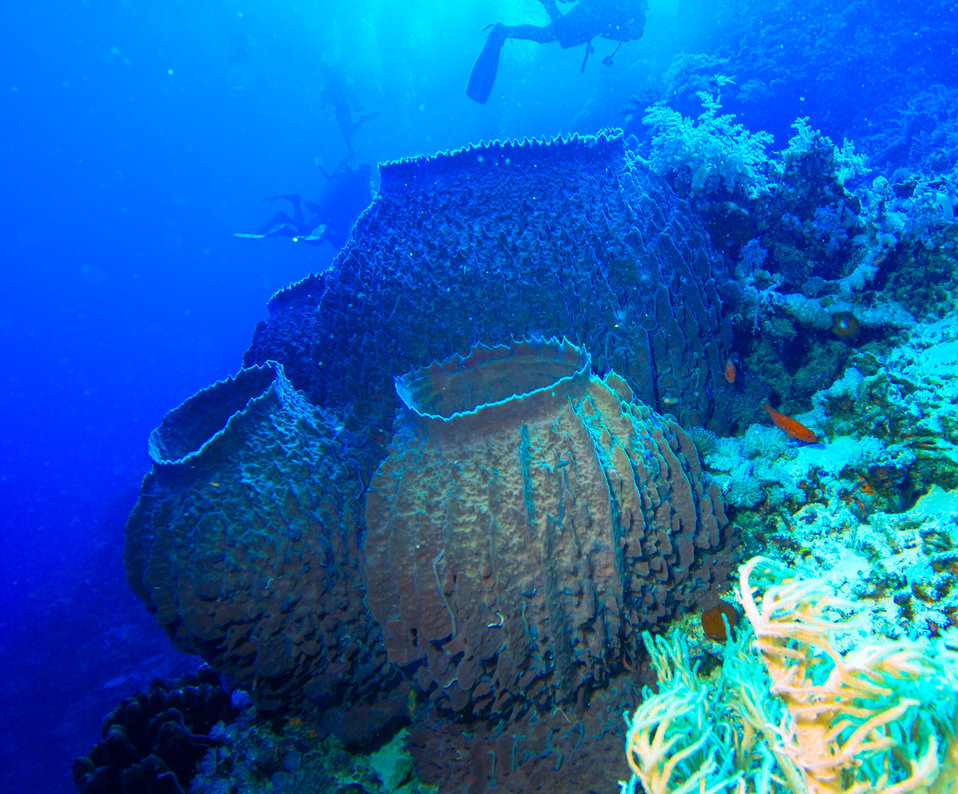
Nederlands: Vaassponzen (xestospongia testudinaria)